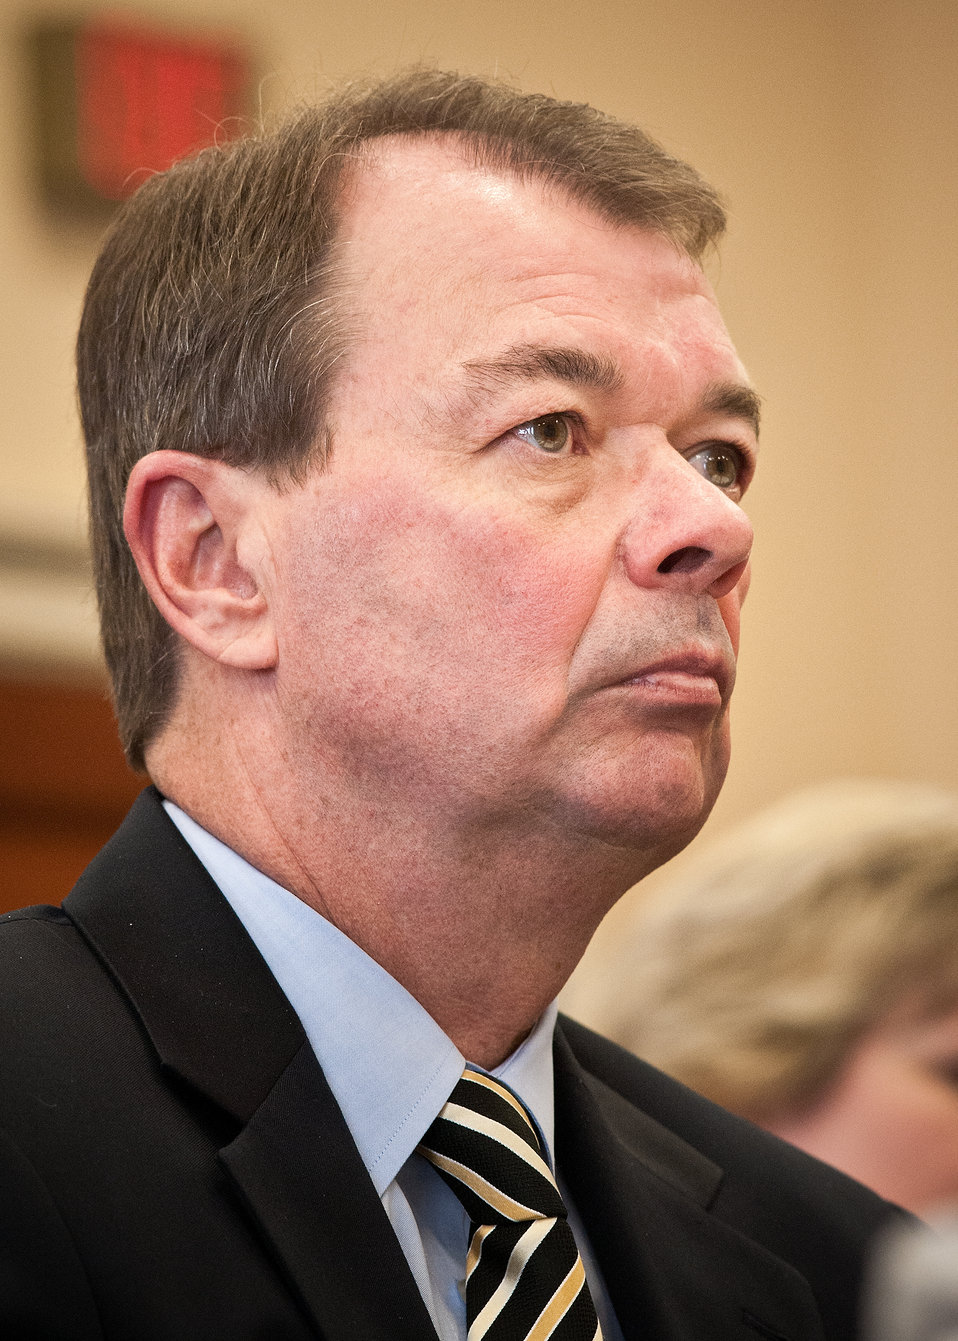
Robert Keeney, Acting Administrator, Agricultural Marketing Service listens to questions posed by members of the House Agriculture Appropriations Subcommittee on Capitol Hill while testifying with Ed Avalos, Under Secretary, Marketing and Regulatory Programs and representatives of other Marketing and Regulatory Program agencies on their fiscal year 2013 budget requests in Washington, D.C., Tuesday, March 6, 2012.